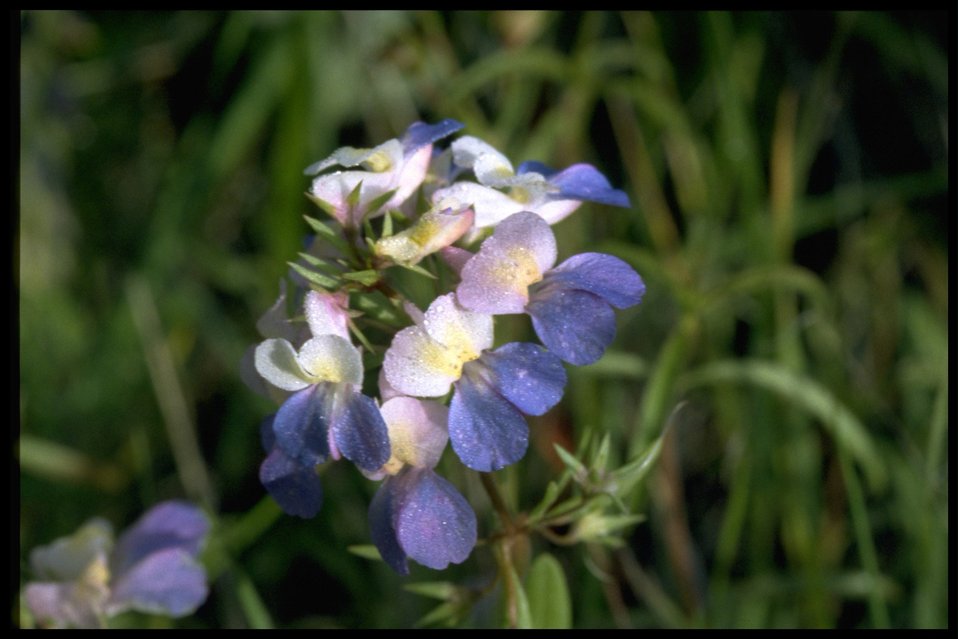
Closeup shot of Collinsia grandiflora.